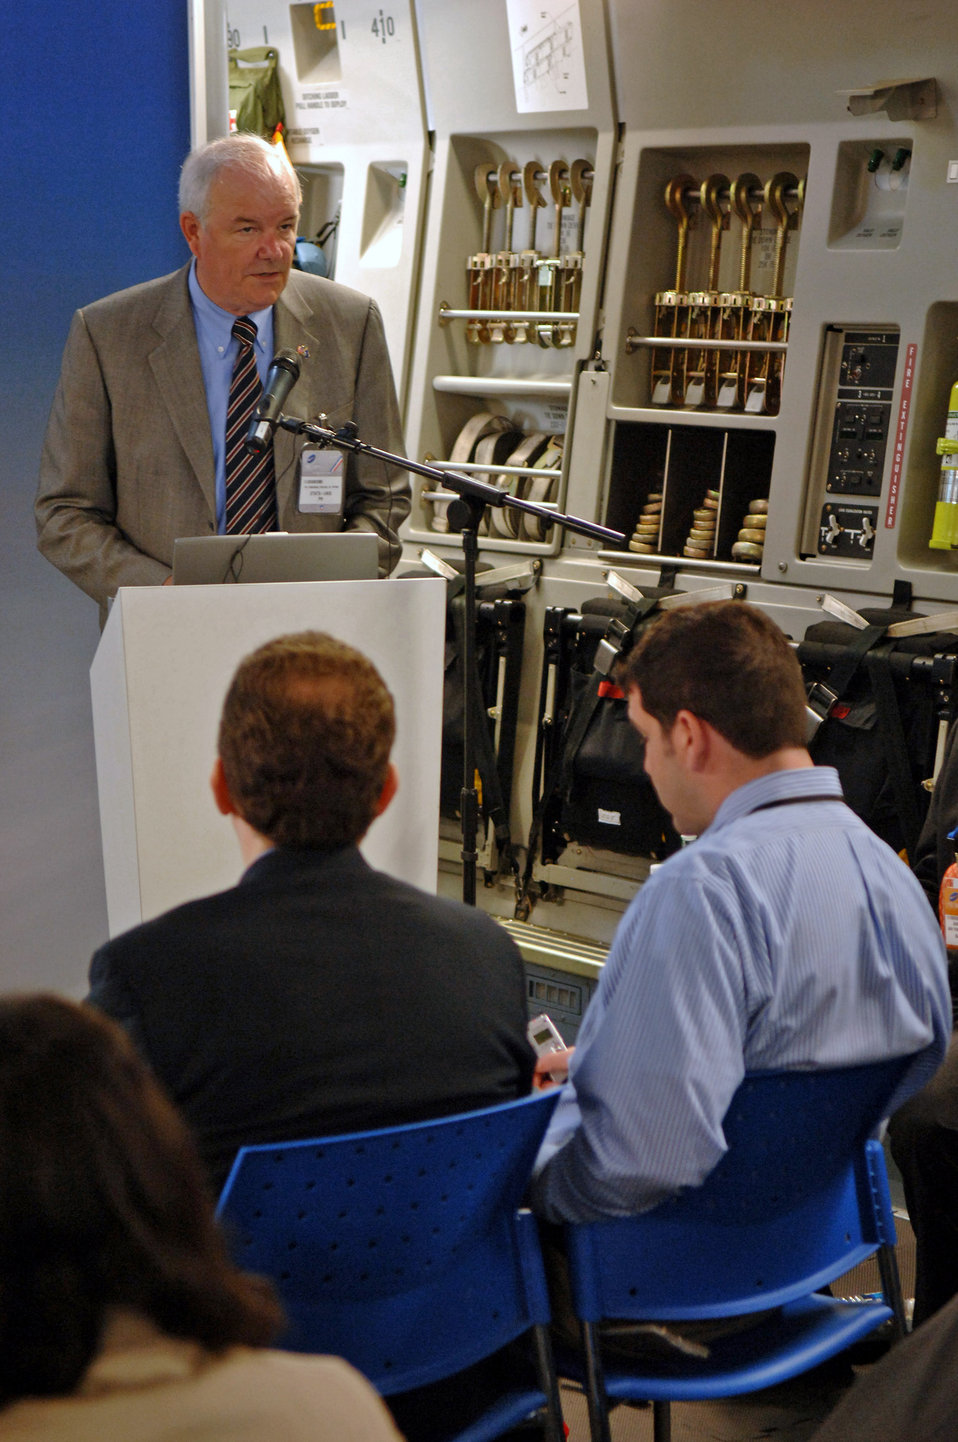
Secretary discusses alternative fuel to worldwide audience

Secretary of the Air Force Michael W. Wynne outlines goals from the Commercial Aviation Alternative Fuel Initiative during a press conference June 19 at the 47th International Paris Air Show at Le Bourget Airport, France. He discussed alternative fuel developments that are being created and ways to reduce greenhouse gas emissions.